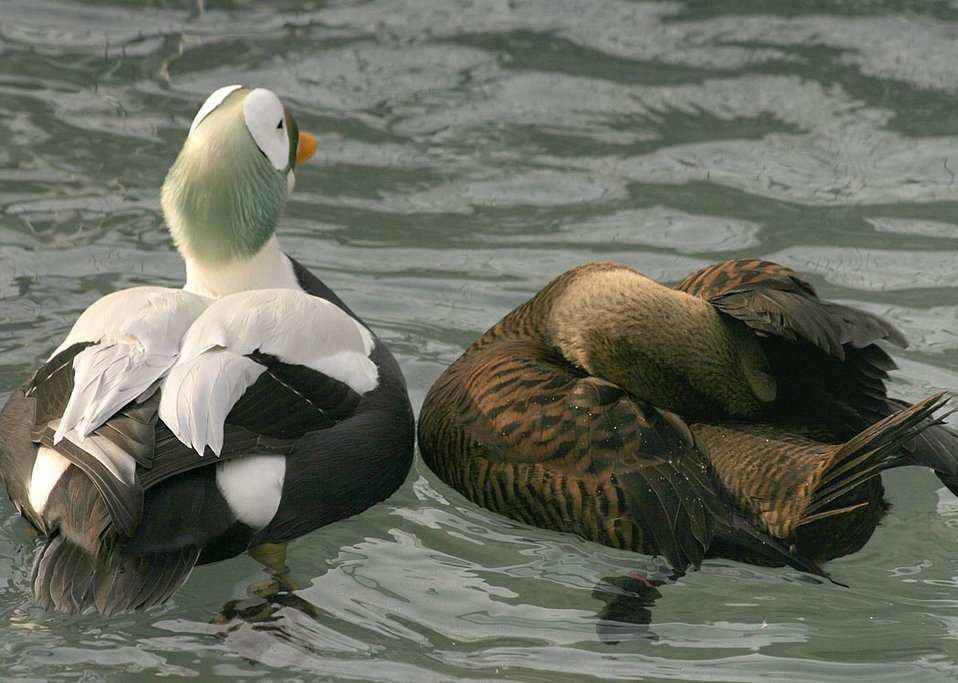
Threatened spectacled eider male and female (Somateria fischeri), Alaska SeaLife Center, Seward, Alaska